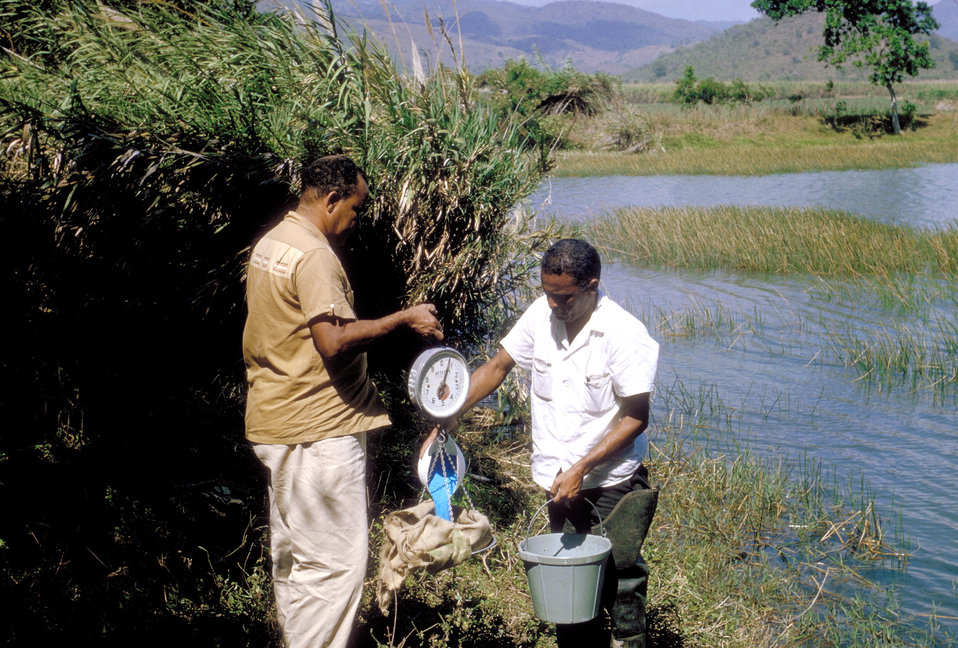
Puerto Ricans weighing copper sulfate for control of bilharzia (schistosomiasis)